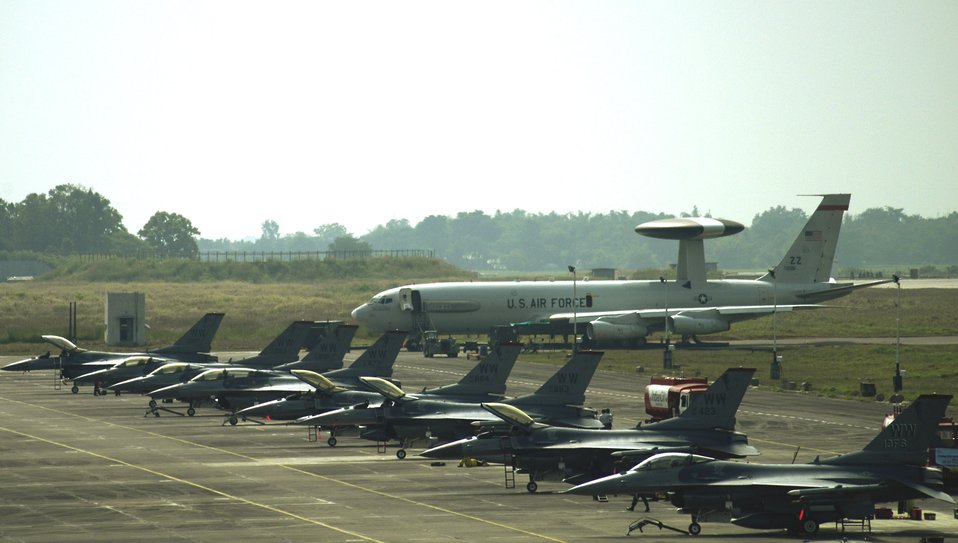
Cope India 06

KALAIKUNDA AIR STATION, India (AFPN) -- F-16 Fighting Falcons, from the 13th Fighter Squadron at Misawa Air Base, Japan, and an E-3 Sentry airborne warning and control system aircraft from the 961st Airborne Air Control Squadron at Kadena Air Base, Japan, fill the flightline here in support of Cope India 06 exercise.